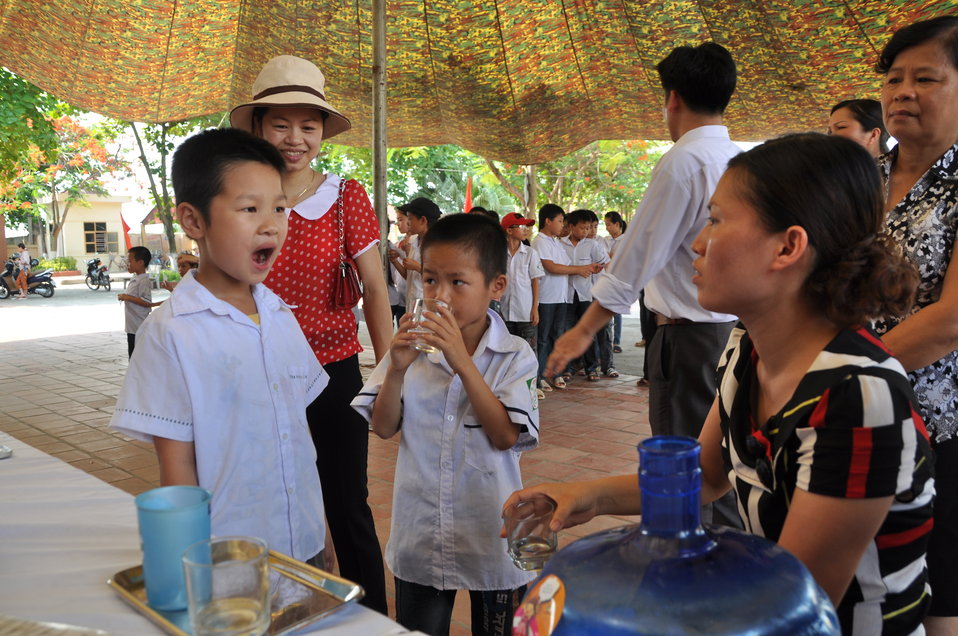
USAID supports deworming education and medication distribution in Bac Giang Province

May 20, 2013